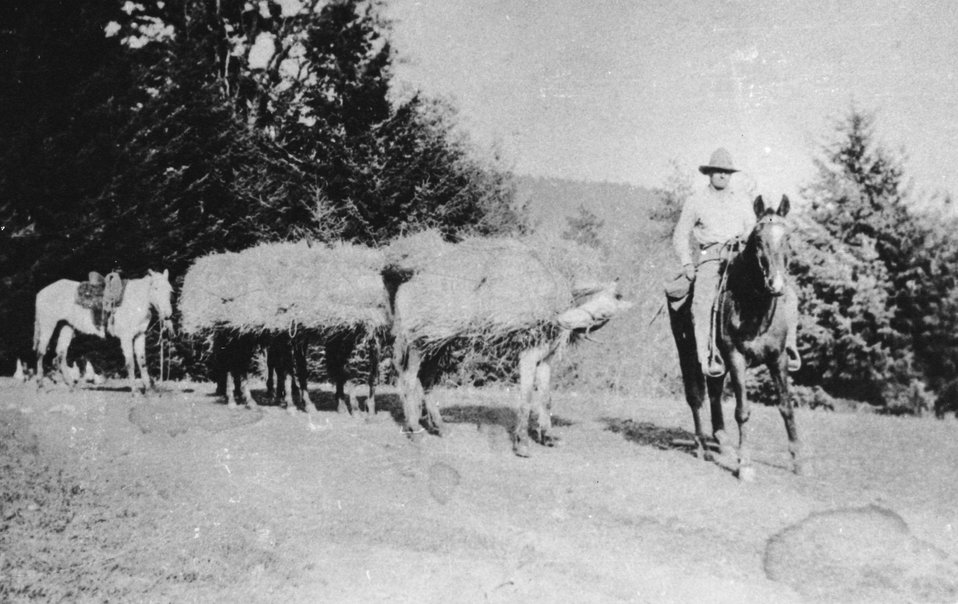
Leo Frye packing hay from Hathaway Jones' Ranch.